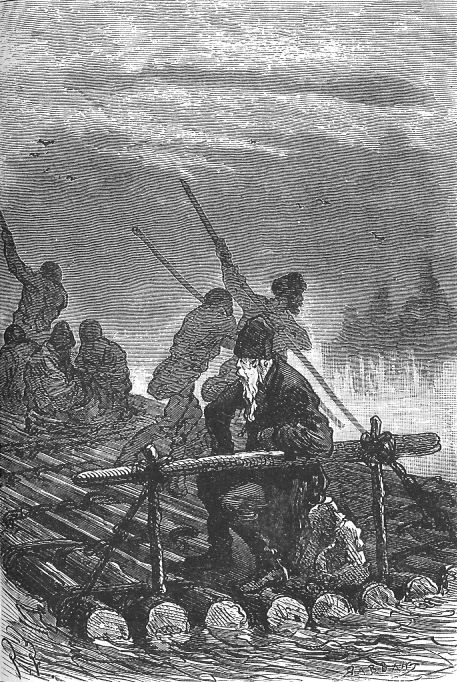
An illustration from the novel 'Michael Strogoff: The Courier of the Czar' by Jules Verne drawn by Jules Férat. Polski: Ilustracja powieści Juliusza Verne'a 'Michał Strogow, kurier carski' autorstwa Julesa Férata. Français : 'Michel Strogoff. Le courier du tzar', Jules Férat. Français : Un vieux marinier du Baïkal avait pris le commandement.